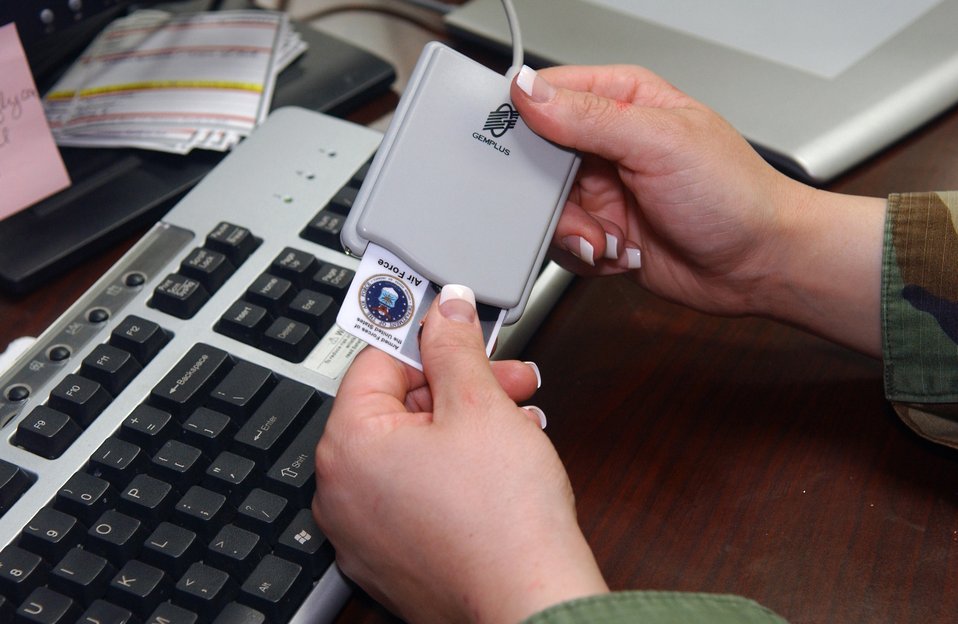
PIV Cards

The NIST demonstration software provides examples of incorporating Personal Identity Verification (PIV) cards to control access to government computers. As shown, an employee will have to swipe her PIV card that holds her unique identifying information before she can access her computer.